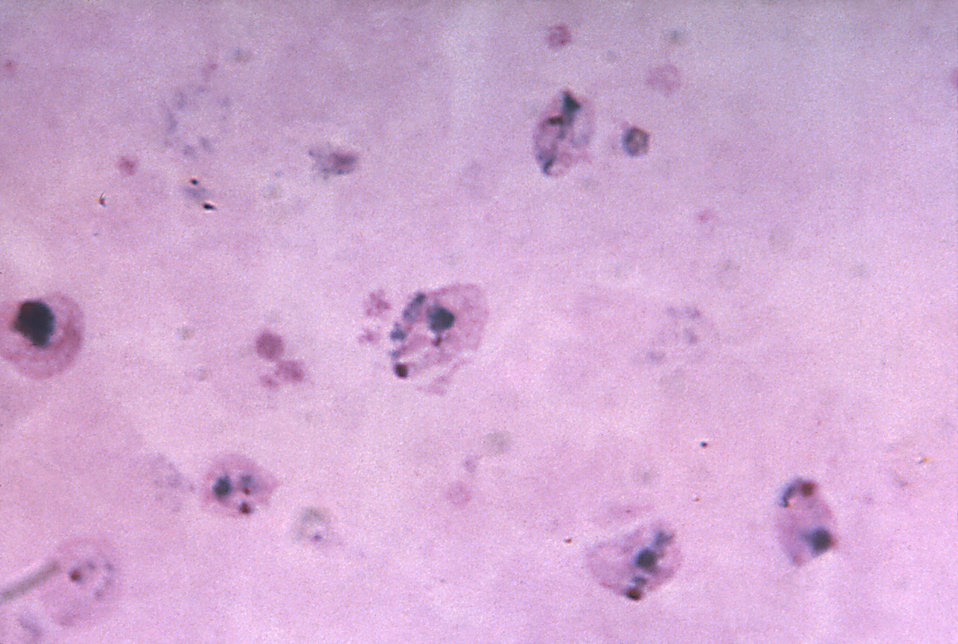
This thick film micrograph depicts growing ameboid P. vivax trophozoites, Magnified 1125X.